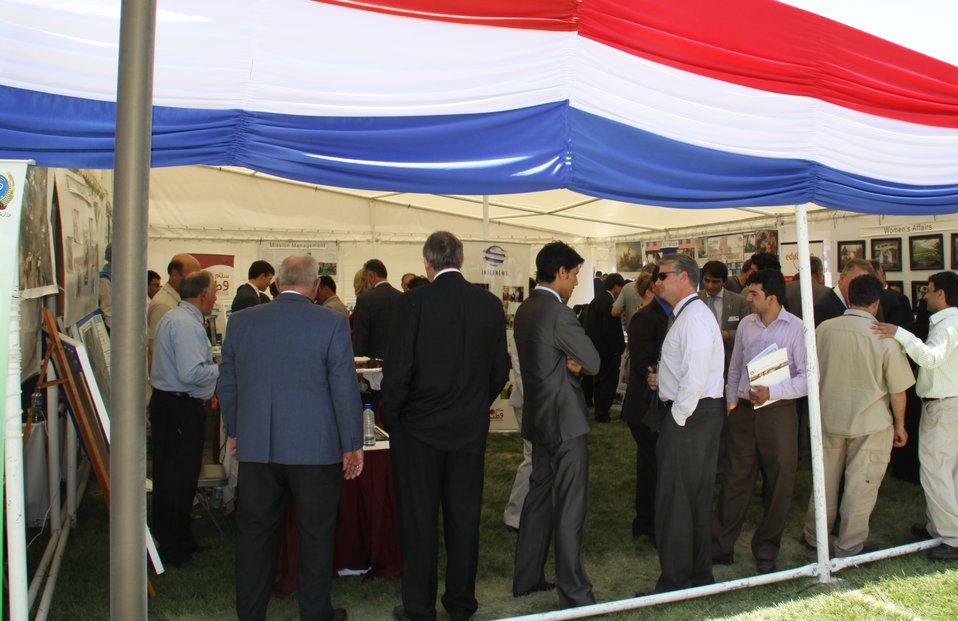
Kabul Official July 4th Celebration